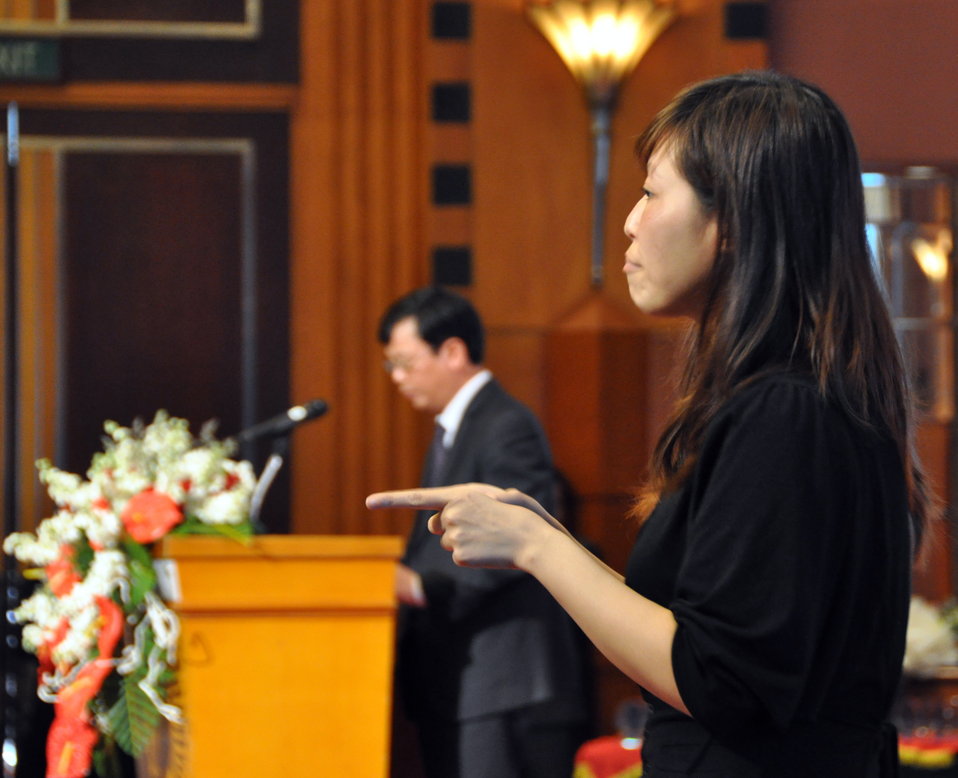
Blue Ribbon Employers Council Awards

Hanoi, April 17, 2013